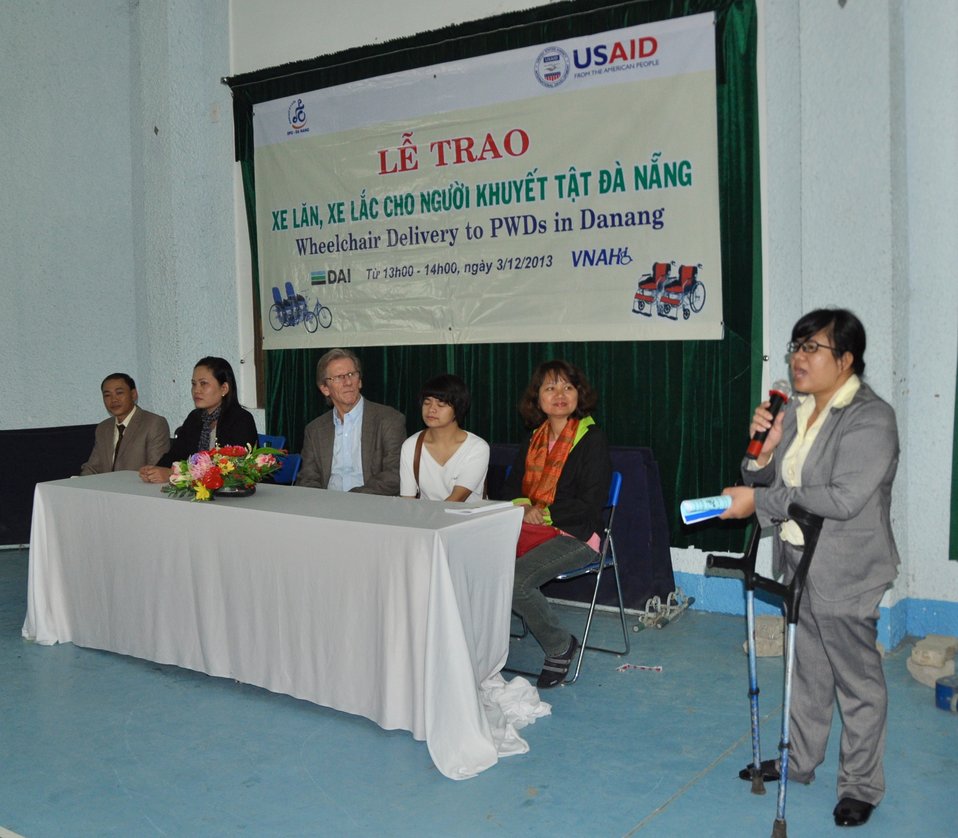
USAID Supports Commemoration of International Day of Persons with Disabilities 2013 in Danang

Danang, December 3, 2013.